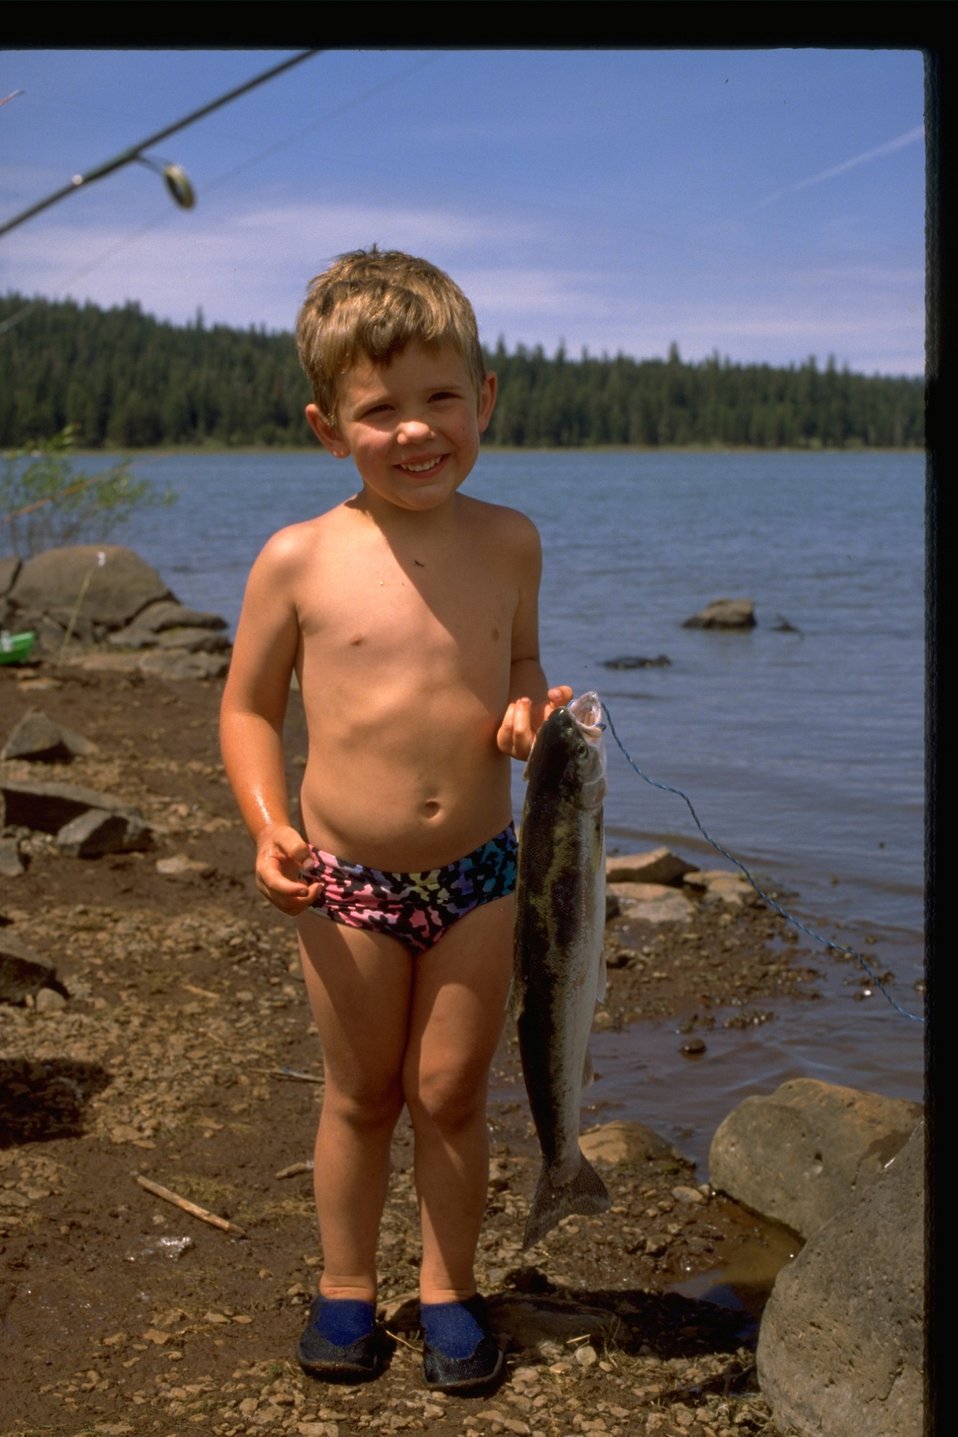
Youngster on a fishing trip at Hyatt Lake.